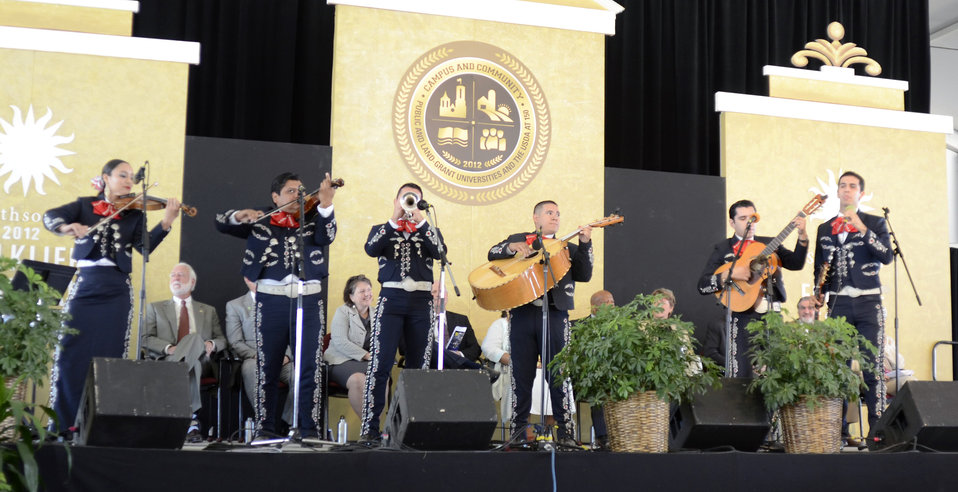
University of Texas-Pan America Marachi Aztlan musical group performs at the opening ceremony for the 2012 Smithsonian Folklife Festival in Washington, D.C. on Wednesday, June 27, 2012. This year’s festival features three themes; “Creativity and Crisis” celebrates the 25th anniversary of the AIDS Memorial Quilt, “Citified,” explores the rich culture and community of neighborhoods east of the Anacostia, and the third “Campus and Community” celebrates 150 years of USDA and the Land-Grant university system.